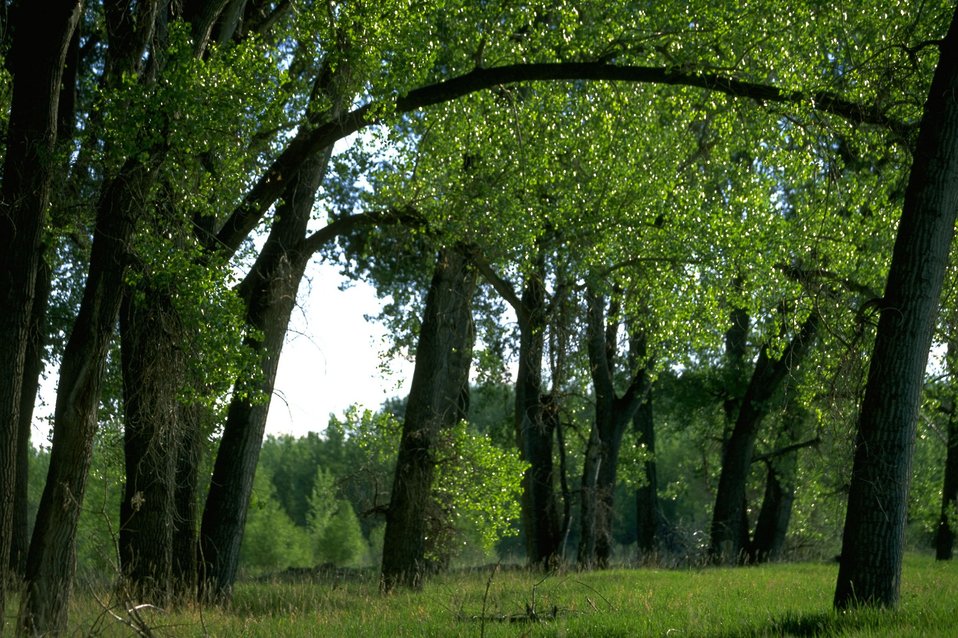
Grove of cottonwood trees along the Clark's Fork of the Yellowstone River in the Sundance Lodge Recreation Area